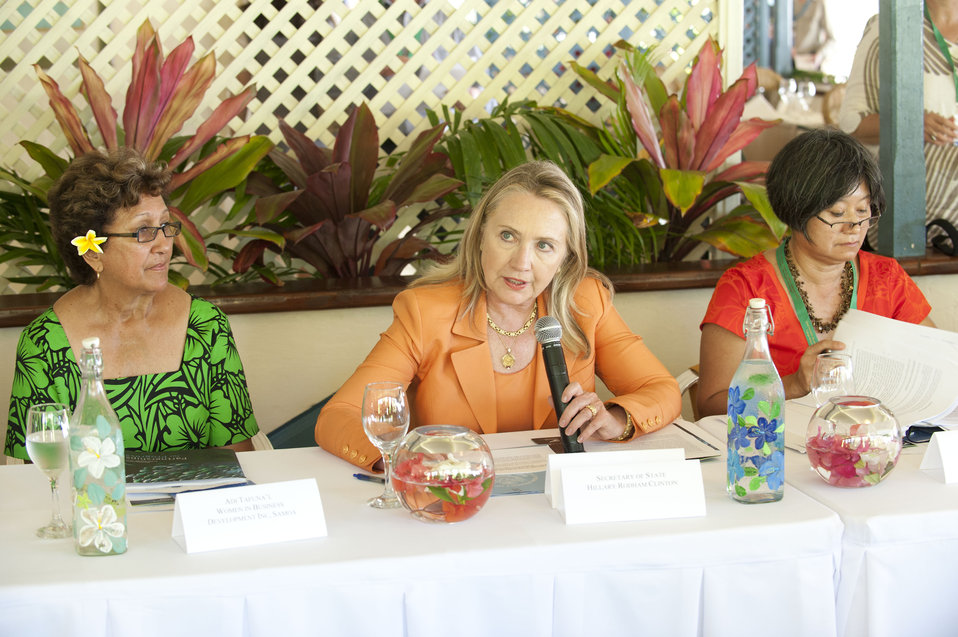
Secretary Clinton Delivers Remarks at the Rarotonga Dialogue on Gender Equality

U.S. Secretary of State Hillary Rodham Clinton delivers remarks with Adi Tafuna'i, Women in Business Development, Inc., and Pacific Island Forum Secretariat Deputy Secretary for Economic Governance and Security Andie Fong Toy at the Rarotonga Dialogue on Gender Equality in Rarotonga, Cook Islands, August 31, 2012.